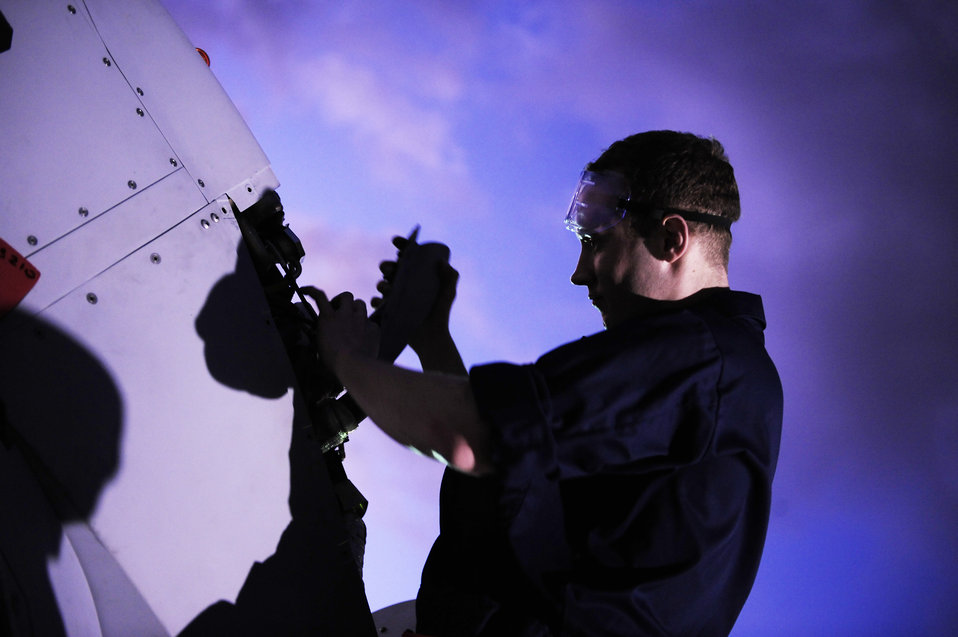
Turn of the screw

Staff Sgt. Adam Snider conducts post flight maintenance on an RQ-1 Predator at the Rafael Hernandez Airport outside Aguadilla, Puerto Rico, Jan. 27, 2010. He is a crew chief with the 432nd Aircraft Maintenance Squadron at Creech Air Force Base, Nev. The RQ-1s are operating out of Puerto Rico in support of Operation Unified Response in Haiti.